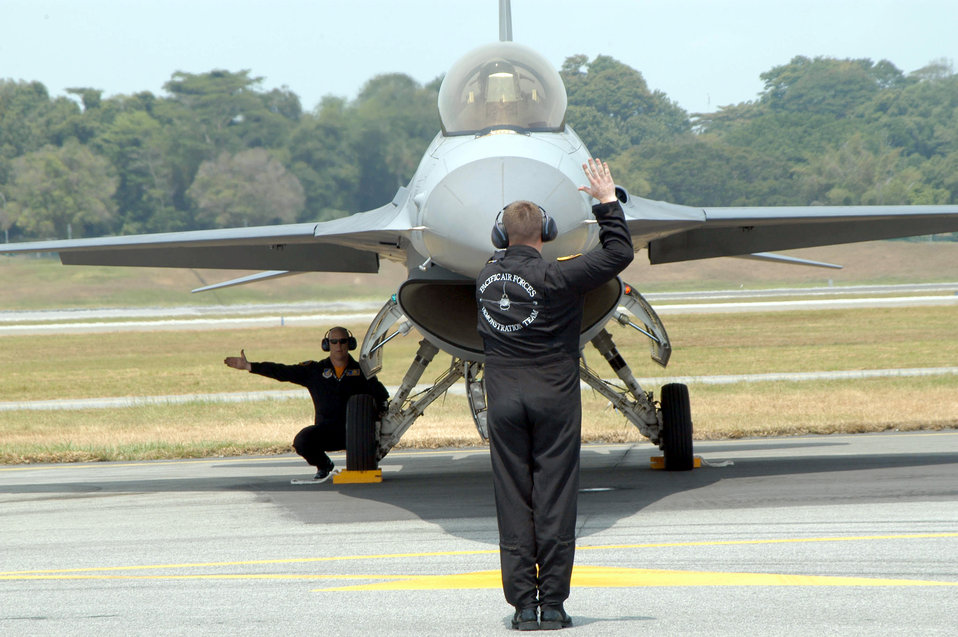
Asian Aerospace 2004

SINGAPORE -- Staff Sgt. Matt Winters and Tech. Sgt. Tim Burnett check an F-16 Fighting Falcon with the pilot, Capt. Keith Rockow, before takeoff. The airmen are all part of the Pacific Air Forces F-16 demonstration team from the 14th Fighter Squadron at Misawa Air Base, Japan. They are here supporting Asian Aerospace 2004.